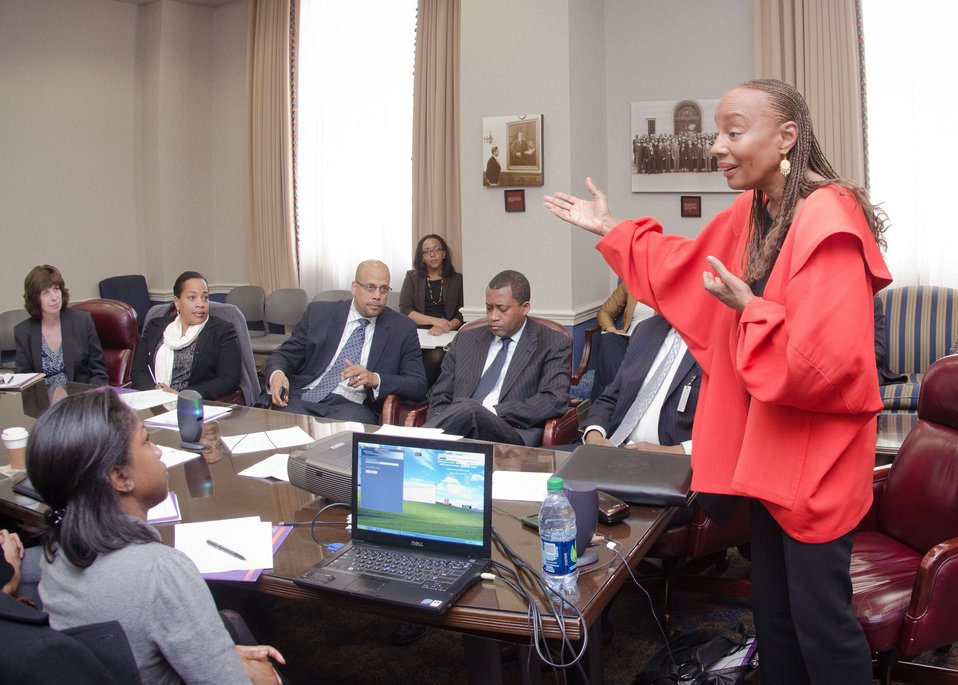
National CARES Mentoring Movement founder and Editor-in-Chief Emeritus, Essence magazine, Susan Taylor (red coat), met for a cross-departmental discussion with Department of Agriculture and Department of Energy personnel in the Whitten Building, U.S. Department of Agriculture, in Washington, D.C., on Tuesday, February 28, 2012. This not-for-profit organization is dedicated to recruiting and connecting mentors with local youth and mentoring organizations to help guide under-resourced children to academic and social success across the country. This discussion provided a continuation of the White House Policy in Action conference that took place in November 2011. The focus of the discussion was about how existing federal programs and administration priorities can be leveraged with her organization, especially as it relates to science, technology, engineering and mathematics (STEM) literacy, education and rural youth.